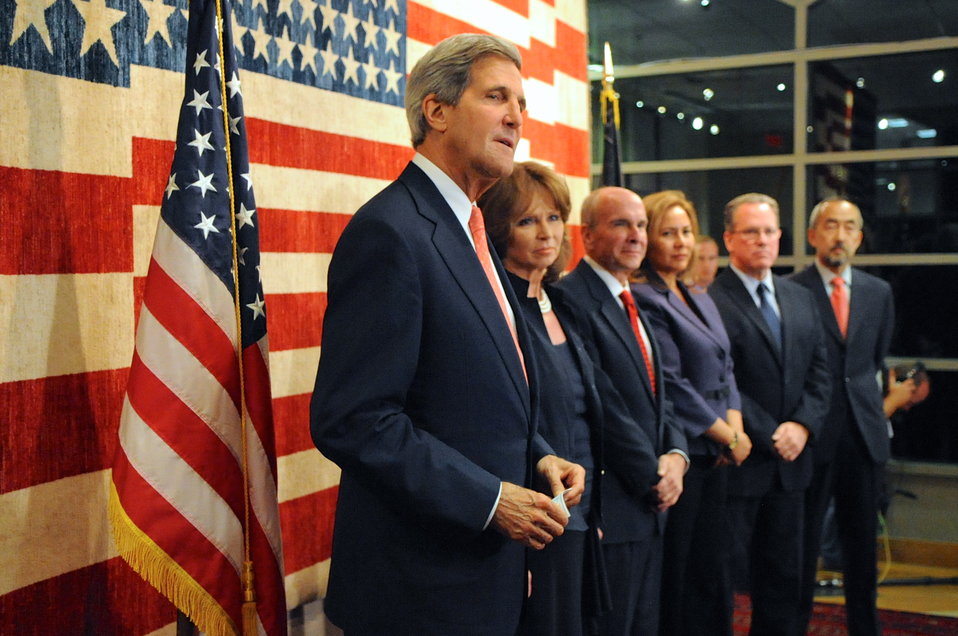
Secretary Kerry Attends Embassy Kabul Meet-and-Greet

U.S. Secretary of State John Kerry listens as Ambassador James Cunningham introduces him to address employees at Embassy Kabul, during a visit to Afghanistan for meetings with President Hamid Karzai on October 12, 2013.